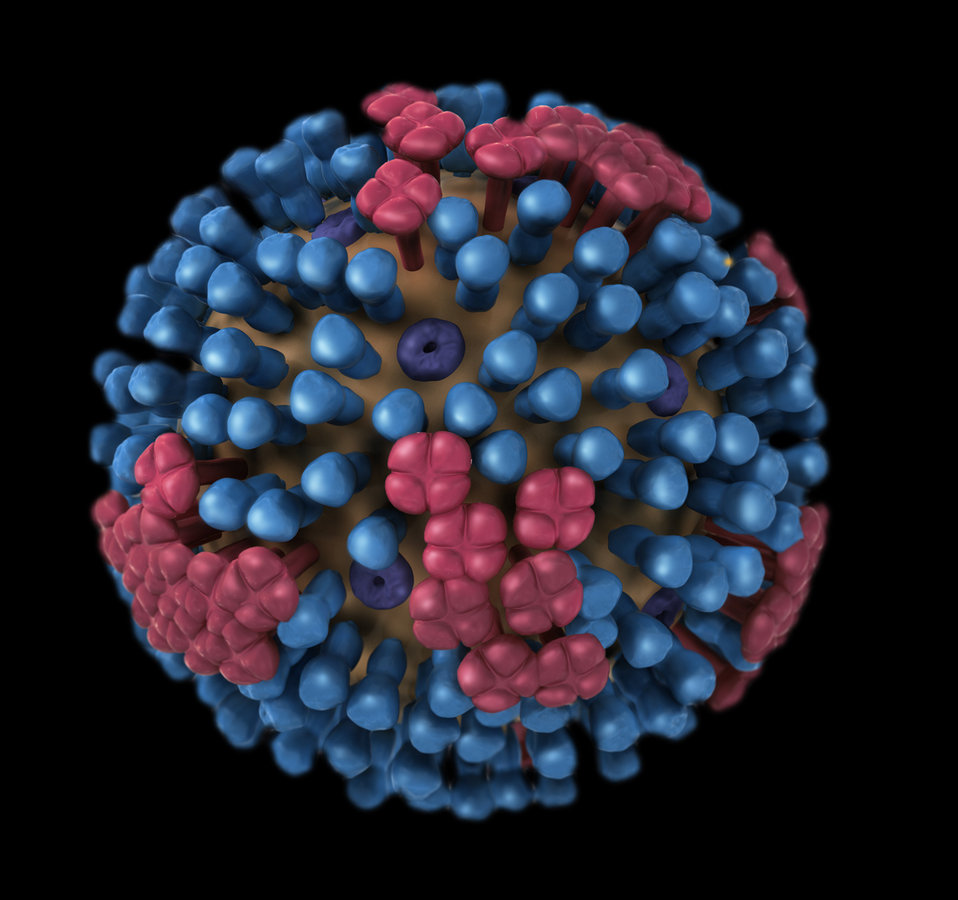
This illustration provides a 3D graphical representation of a generic influenza virion's ultrastructure, and is not specific to a seasonal, avian or 2009 H1N1 virus. See PHIL 11828 for a view of this virus in which a portion of the virion's protein coat, or 'capsid', has been cut away, revealing its inner nucleic acid core proteins, as well as a key identifying the organism's protein constituents.